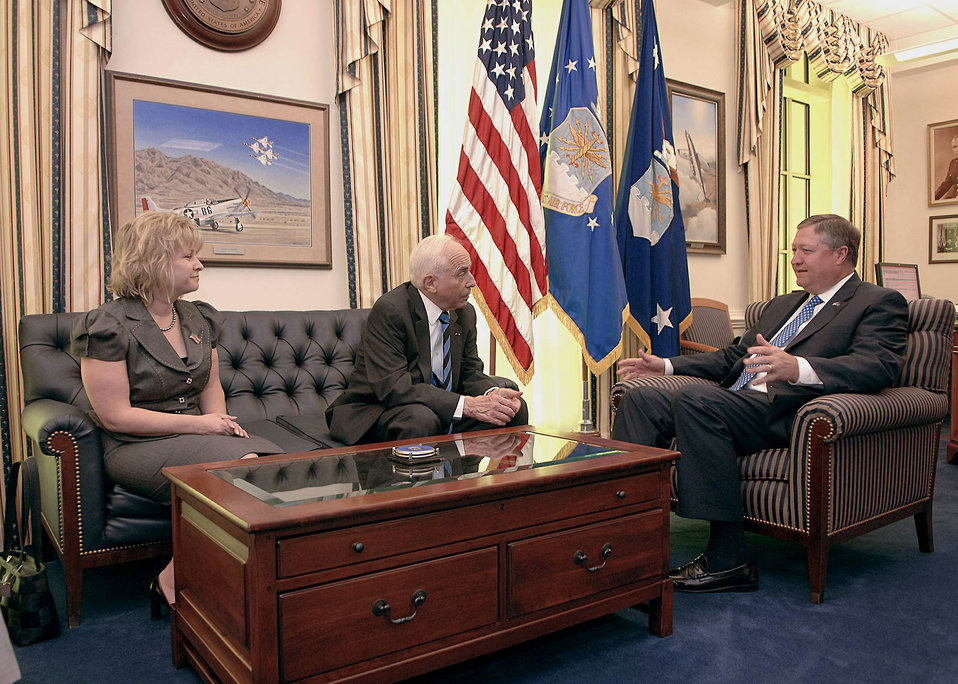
Air Force employee serves more than half a century

Anthony Duno along with his daughter, Nancy Broadway, visit with Secretary of the Air Force Michael B. Donley July 24 at the Pentagon. With nearly 60 years of service, he is the second longest serving Air Force civilian.